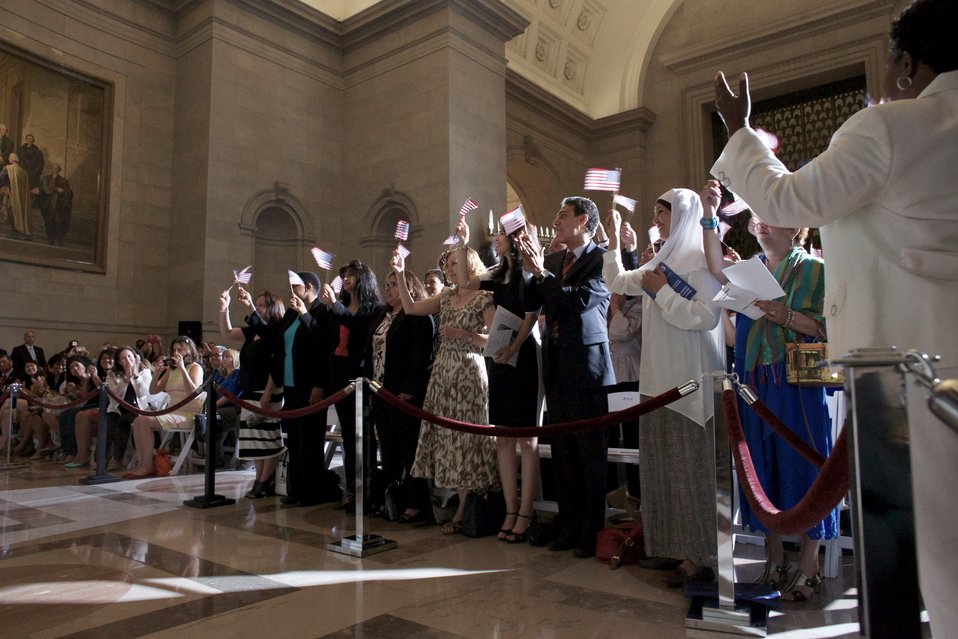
Naturalization Ceremony with Michelle Obama